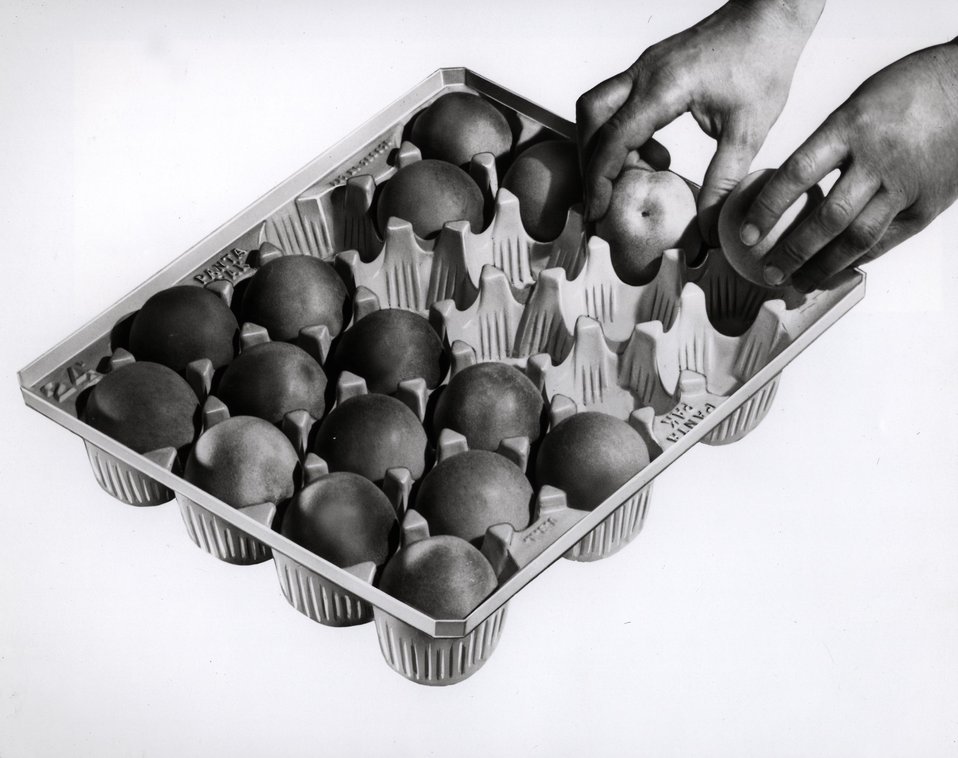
The chemical industry uses coal chemicals--various light, medium and heavy oils and coal tar formed when coal is burned to make coke--to produce thousands of by-products including dyes, perfumes, wood preservatives, medicines, fertilizers and plastics. c. 1967